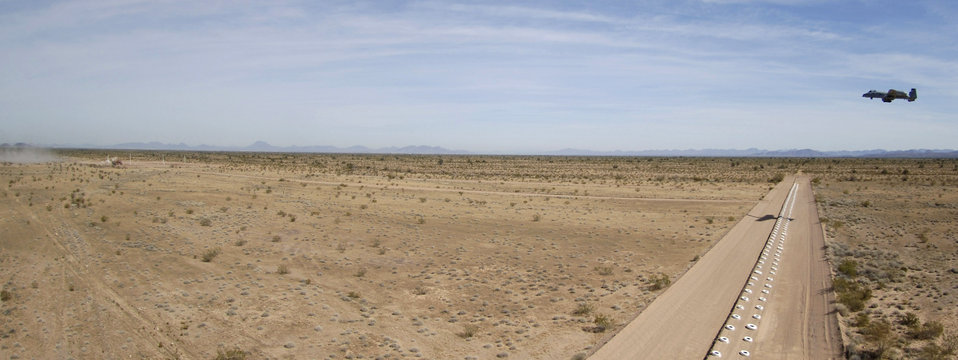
Hawgsmoke 2006

An A-10 Thunderbolt II, fires the 30 mm gun at a low angle strafe, as part of the 2006 Hawgsmoke competition, Thursday, March 23, 2006, at the Barry-Goldwater Range, Gila Bend Air Force Auxiliary Field. There are four parts of the competition. Each team has four members in which they have 100 bullets each to use toward the target. This year's competition coincides with the 30th anniversary of the Warthog. Twenty squadrons from around the world come together to gain the honor of the